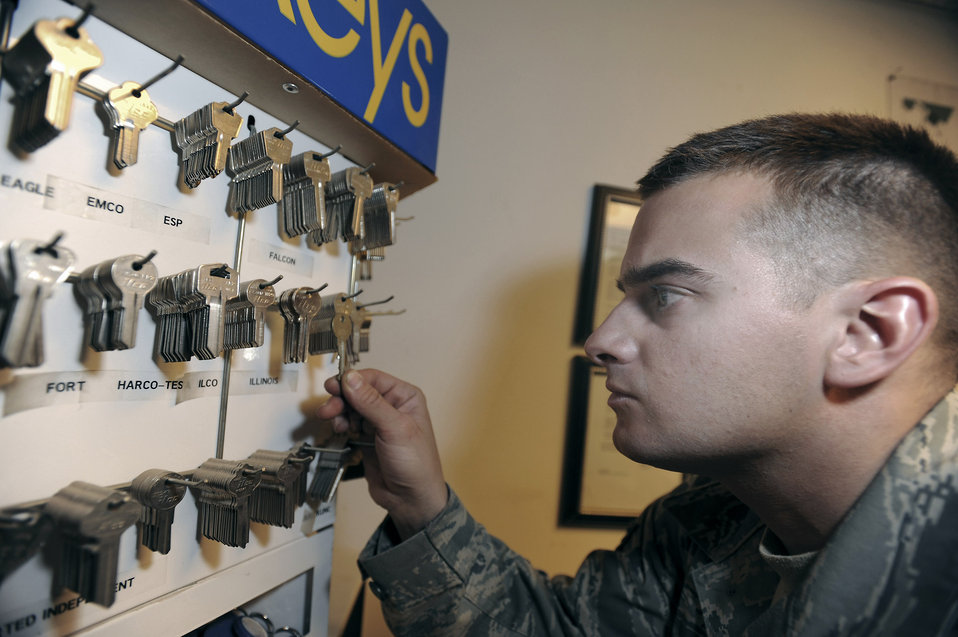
The key masters

Senior Airman Jesse Testudine searches for the correct key blank to make a duplicate key Feb. 25 at an air base in Southwest Asia. Airman Testudine and fellow locksmiths make around 430 keys a month for new personnel, new building structures and to replace lost keys. Airman Testudine is a locksmith with the 379th Expeditionary Civil Engineer Squadron, and is a native of Baltimore.